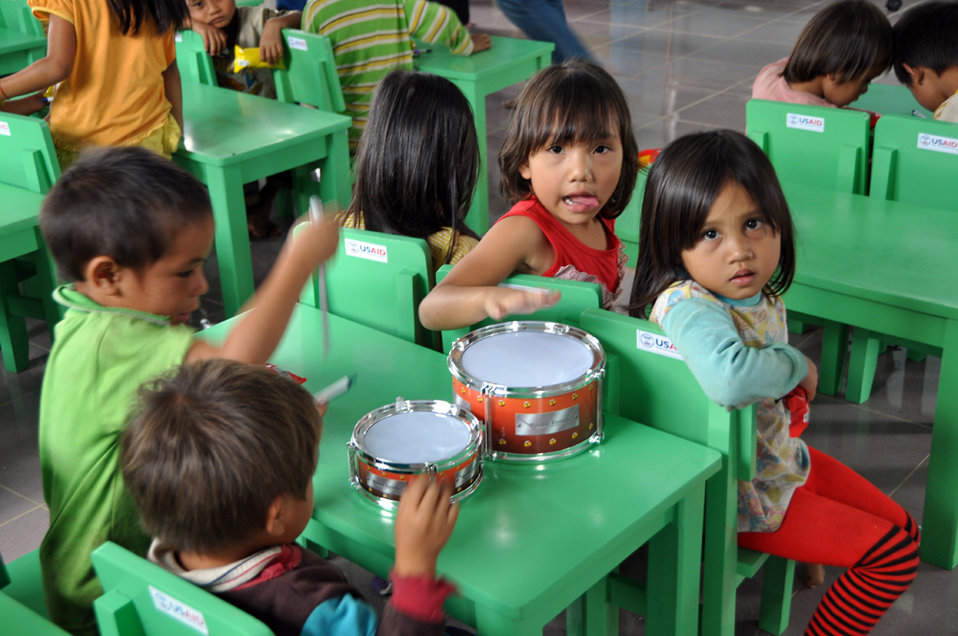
USAID contributes to refurbished pre-schools and teacher training in Vietnam